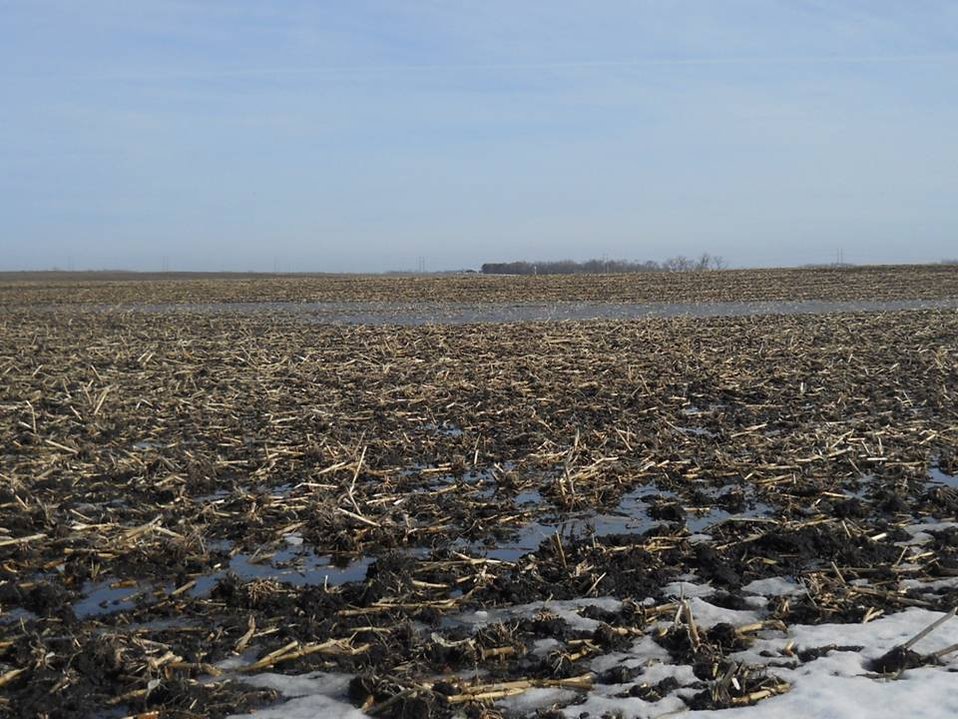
Farmed wetland

Utilized by waterfowl and shorebirds in the spring.